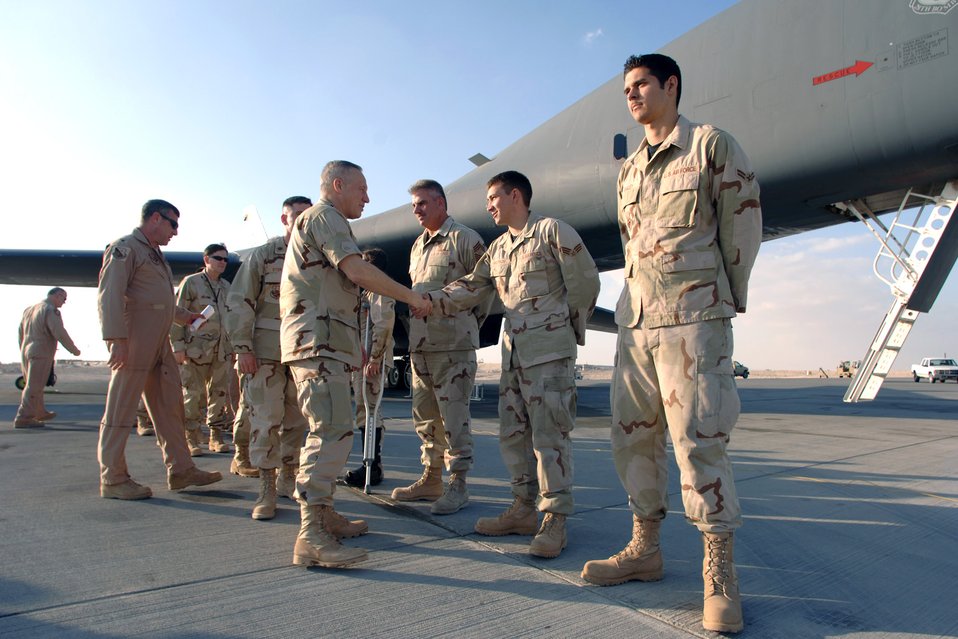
AFMC commander visits Southwest Asia

Gen. Bruce Carlson meets B-1 Lancer maintainers assigned to the 379th Expeditionary Aircraft Maintenance Squadron Airmen. Meeting the general are Chief Master Sgt. Timothy Byrd, Senior Airman Jason Anderson and Airman 1st Class Justin Bailey. General Carlson is the commander of Air Force Materiel Command.